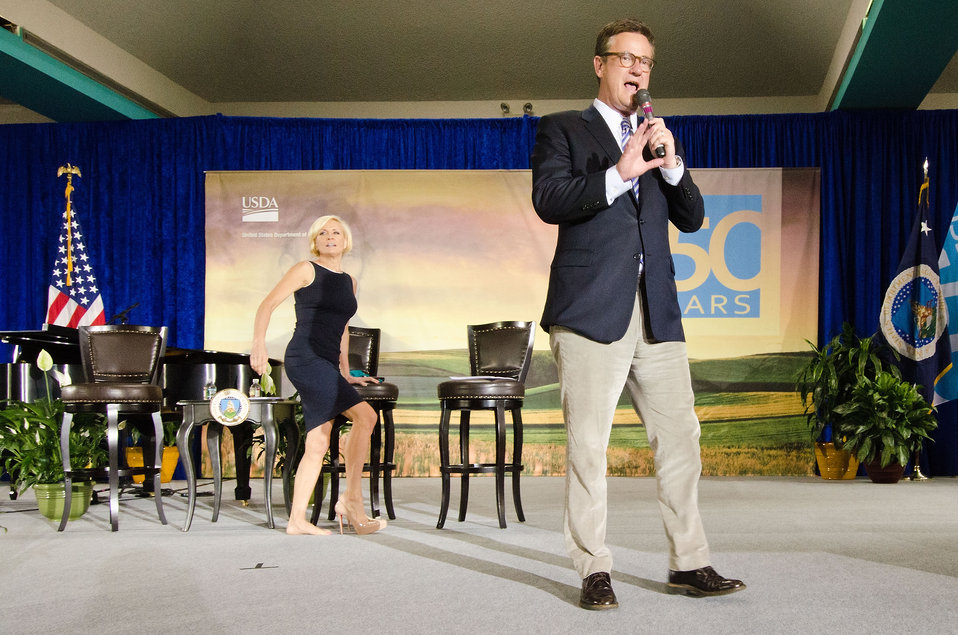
Mika Brzezinski and Former Congressman Joe Scarborough (R-Fla.) hosts of MSNBC’s “Morning Joe.” MSNBC were the Masters of Ceremony for the United States Department of Agriculture's 150th Anniversary celebration in Washington, D.C., on Tuesday, May 15, 2012. Brzezinski puts her shoes on after exercising to demonstrate the importance of the Fuel Up to Play 60 program. Fuel Up to Play 60 is an in-school nutrition and physical activity program launched by the National Dairy Council and the National Football League, in collaboration with USDA, to combat childhood obesity.